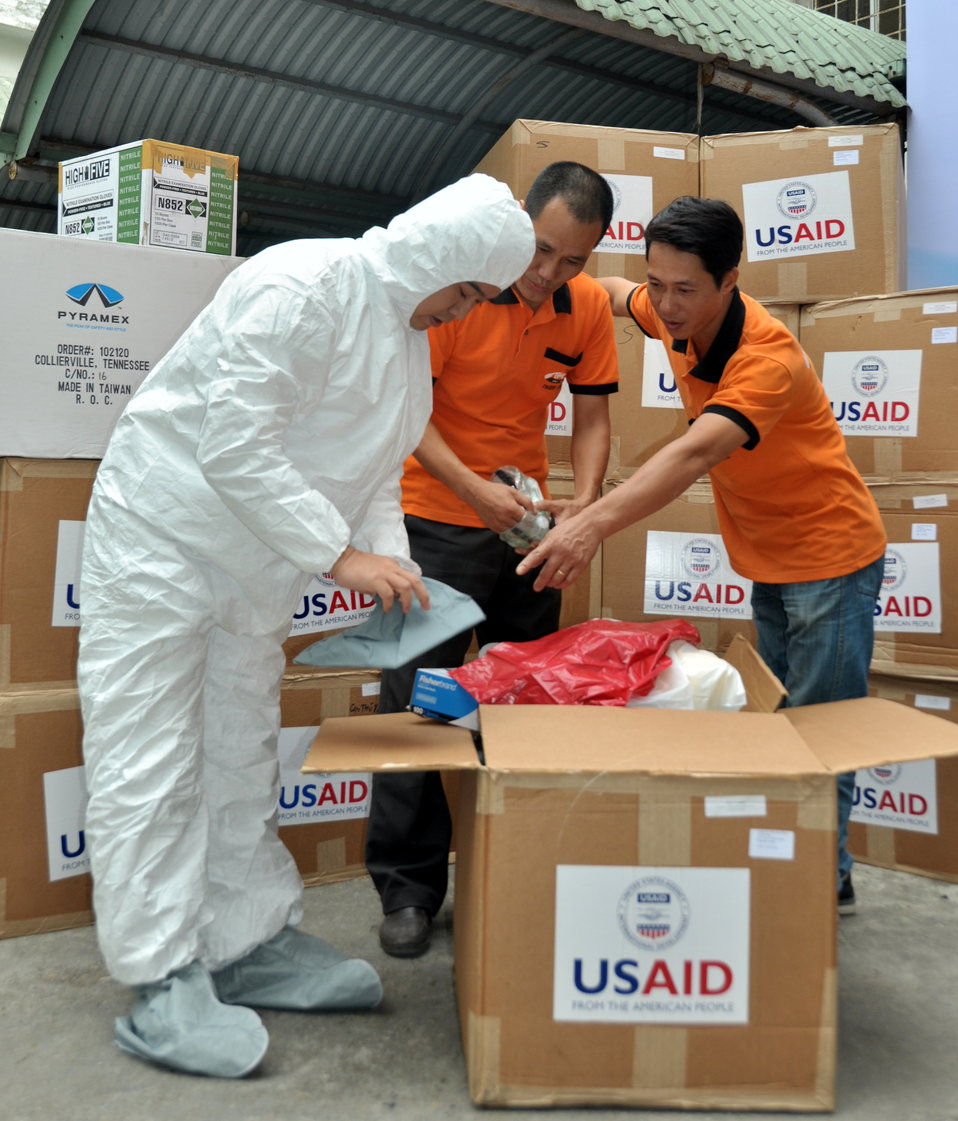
USAID donates personal protective equipment to the Department of Animal Heath under Vietnam's Ministry of Agriculture and Rural Development.

Hanoi, November 20, 2013.